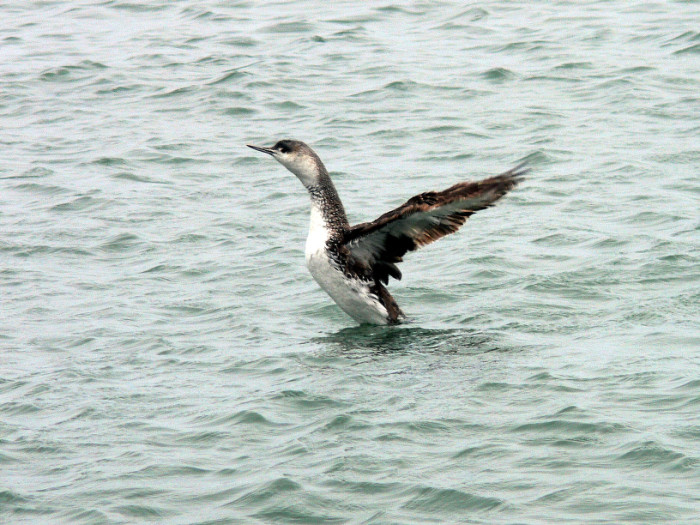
red-throated loon

Jivenile red-throated loon pracices takeoffs